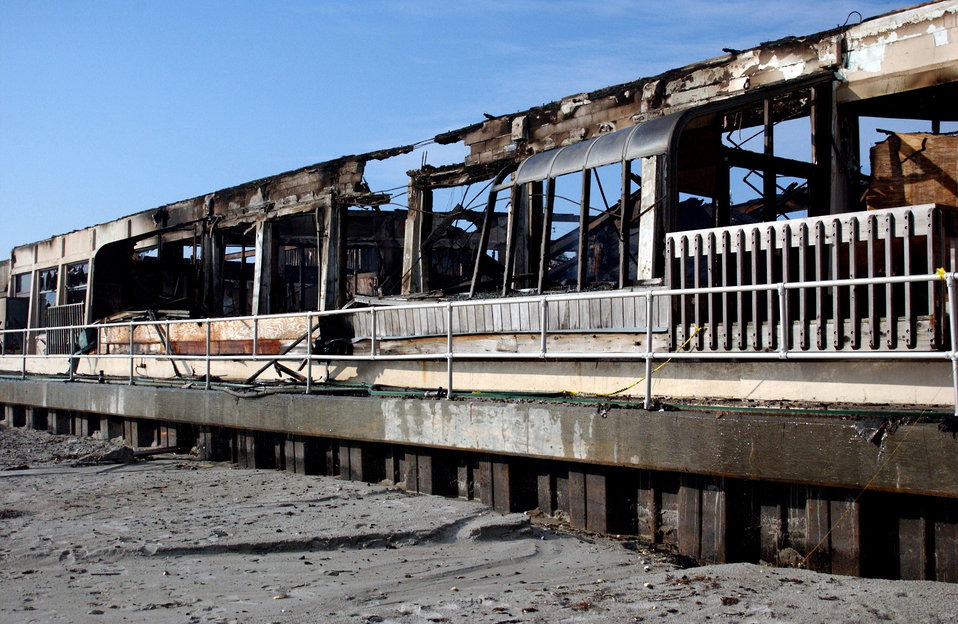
Fire destroys Patrick officers club

PATRICK AIR FORCE BASE, Fla. -- The view from the beach side of the officers club here shows the extent of the fire damage. The innards of the facility were completely destroyed.